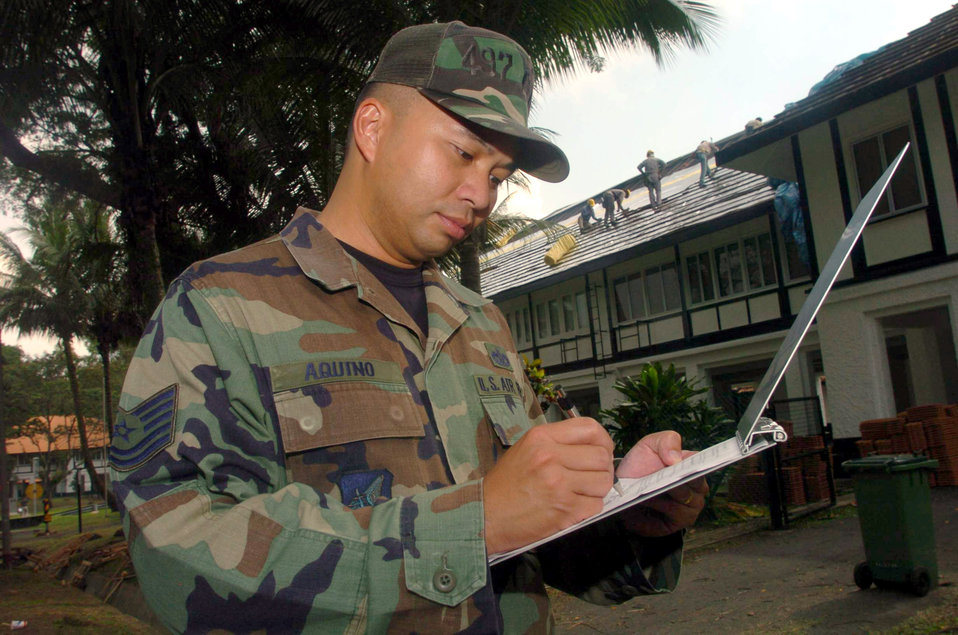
Succeeding in Singapore

SEMBAWANG, Singapore -- Tech. Sgt. Ricky Aquino inspects the work of local contractors on a house used by Airmen here. Sergeant Aquino is a civil engineer Airman from the 497th Combat Training Squadron. The squadron supports regular temporary-duty rotations of U.S. fighter aircraft.